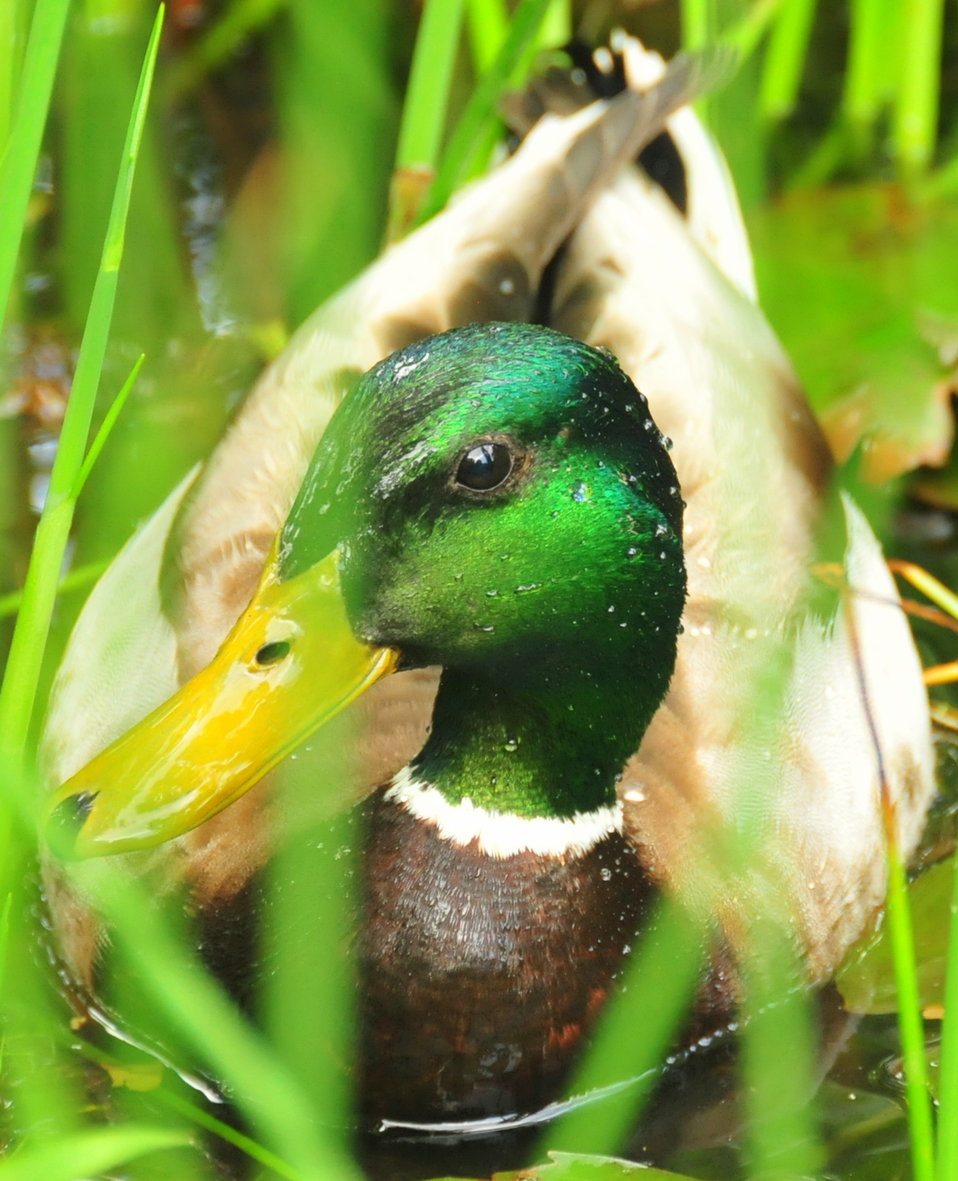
Mallard Drake Closeup